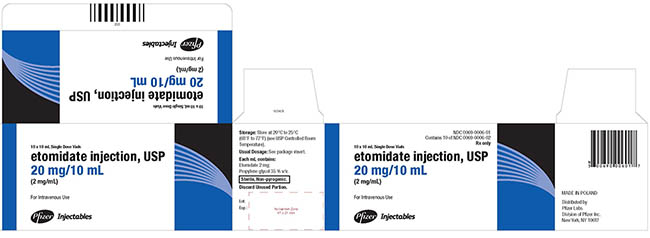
RECALLED – Etomidate Injection, 2mg/mL

February 19, 2014 – Product Recall – Agila Specialties Private Limited Initiates Voluntary Nationwide Recall of 10 Lots of Etomidate Injection 2 mg/mL – 10 mL and 20 mL due to the Presence of Particulate Matter and/or Illegible and Missing Lot Number and/or Expiry Date.